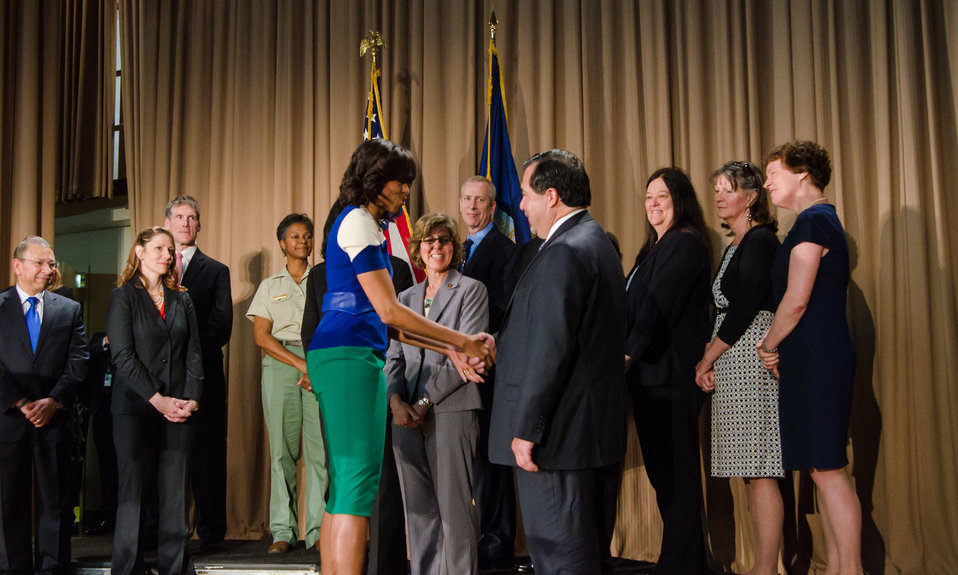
First Lady Michelle Obama shakes hands with Al Almanza, administrator of the Food Safety and Inspection Service (FSIS) while visiting the U.S. Department of Agriculture (USDA) to thank employees for their service and dedication in Washington, D.C. on Friday, May 3, 2013. The First Lady reminded federal workers of the importance of the work they do to support American farmers and ranchers, protecting the environment, lifting up rural communities, and keeping food safe, and working to end hunger.